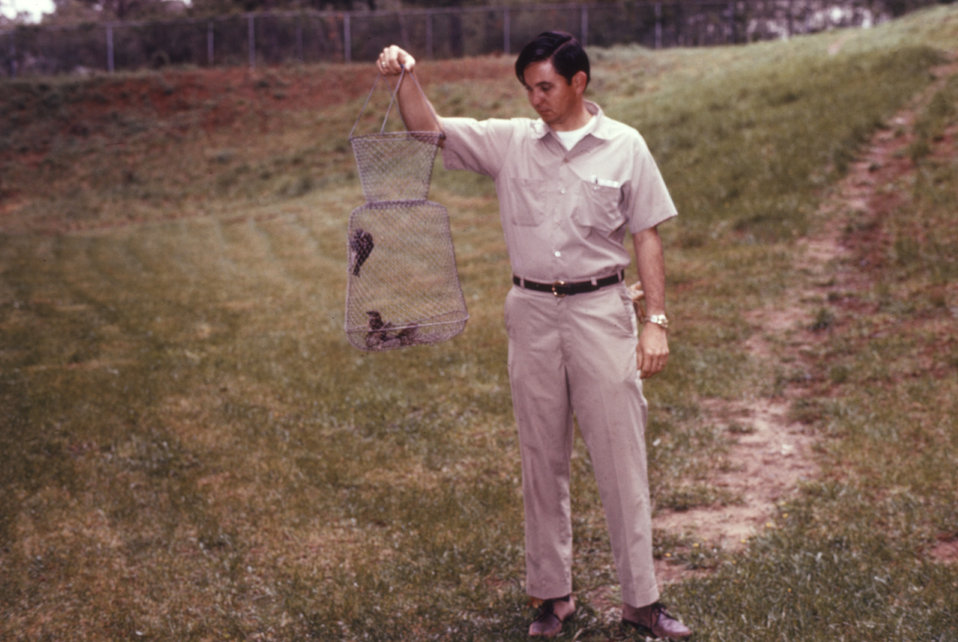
A fish basket like this one is often used as a holding cage for birds that will be later tested during arbovirus studies.